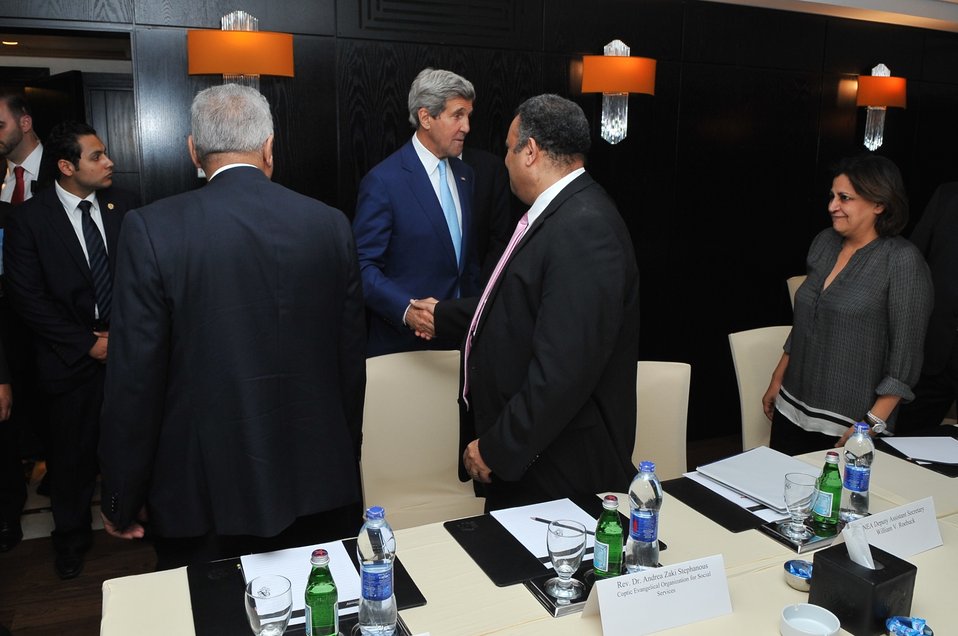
Secretary Kerry Meets With Egyptian Civil Society

U.S. Secretary of State John Kerry meets with members of Egyptian civil society, including the nephew of former President Anwar Sadat, before a meeting with newly installed President Abdel Fattah Al-Sisi in Cairo on June 22, 2014.